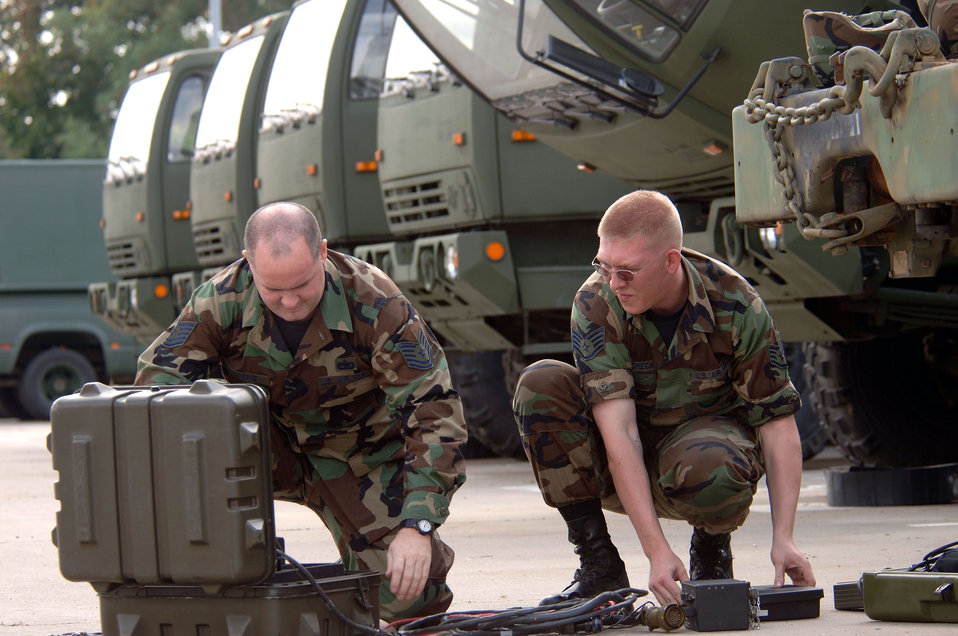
Vehicle Operations

SULLIVAN BARRACKS, Germany -- Tech. Sgt. Hartzell Wilkins (left) and Staff Sgt. Kyle Polencheck place a maintenance support device into a hardened case for storage after servicing a truck. The vehicle maintainers used the device to pinpoint a faulty engine sensor on a light military tactical vehicle in 20 minutes. The $7,000 system saves thousands of manhours yearly, allowing vehicle maintenance operators here to more effectively manage their fleet of more than 85 vehicles. The Airmen are assigned to the 4th Air Support Operations Squadron here.